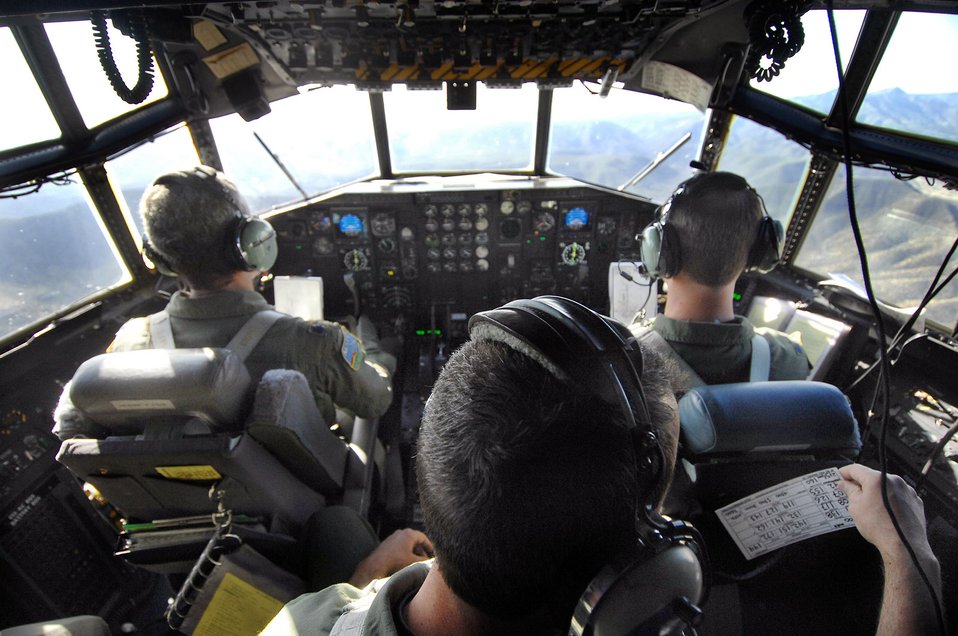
Air Force aerial firefighters train in New Mexico

A C-130 Hercules aircrew flies over a ridge line after taking off May 1 from Kirtland Air Force Base, N.M., during Modular Airborne Fire Fighting System training at the U.S. Forest Service's Albuquerque Air Tanker Base in New Mexico. The aircrew is from the 731st Airlift Squadron at Peterson Air Force Base, Colo.,